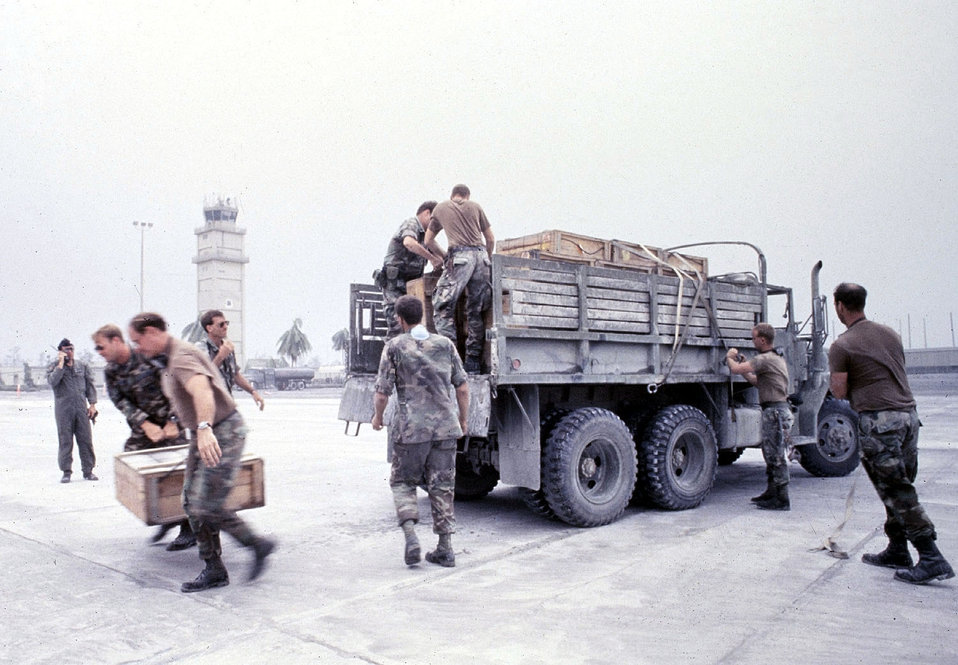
Evacuation

CLARK AIR BASE, Philippines -- In 1991 U.S. Air Force and Marine personnel evacuated a truckful of munitions aboard a helicopter at the height of the Mount Pinatubo volcanic eruption at here. The lahar, (hot mudflow) and ash fall from the volcano resulted in extensive damages to major facilities on base. Clark AB closed down in November of 1991 ending almost a century of American military precense in the Philippines.